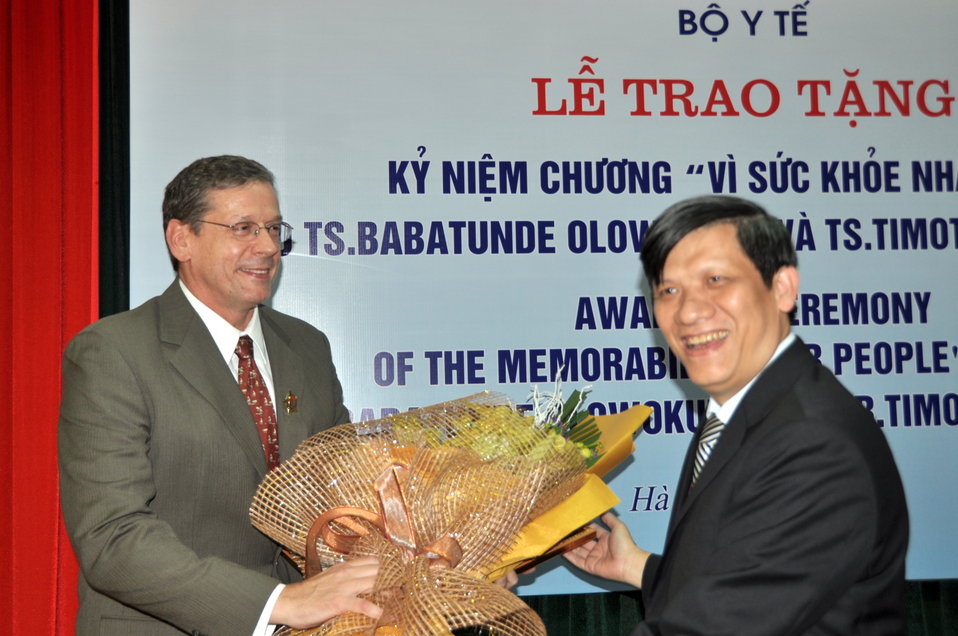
Ministry of Health awards Dr. Timothy Meinke of USAID the ‘Memorabilia for People’s Health’

Hanoi, October 28, 2013.